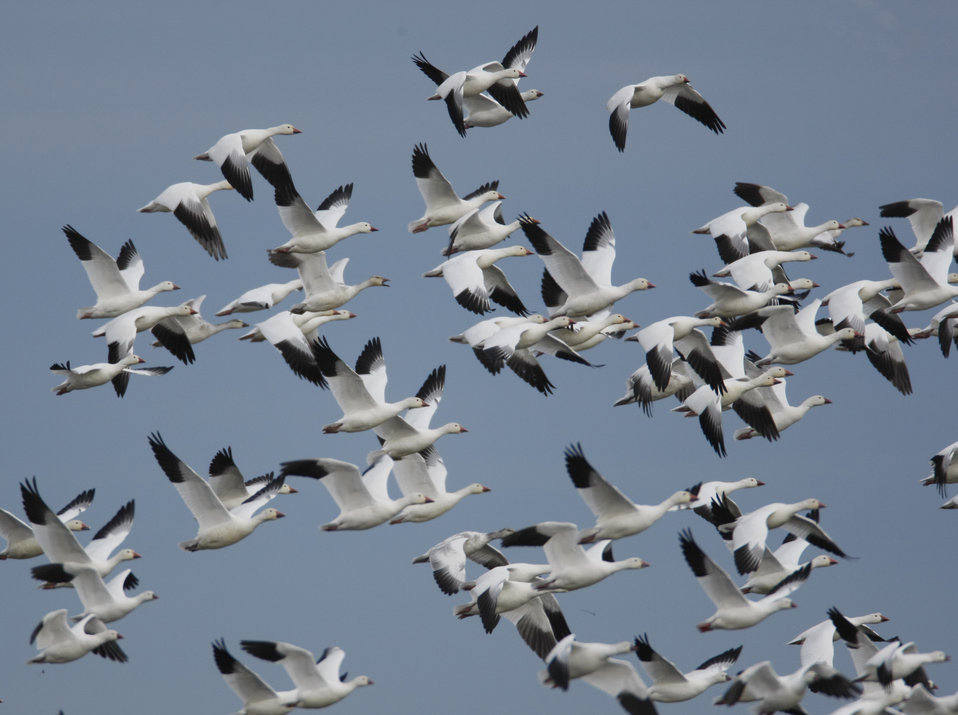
Snow Geese and Ross's Geese

Snow Geese (Chen caerulescens) & Ross's Geese (Chen rossii) at the Sacramento NWR, Willows, CA